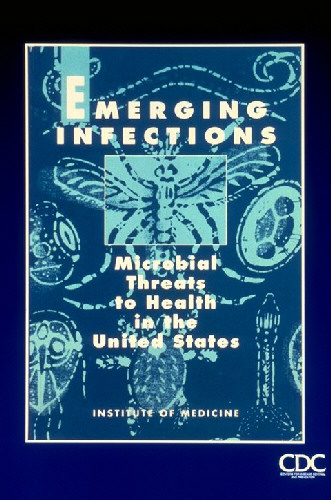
Cover of Institute of Medicine Report, Emerging Infections: Microbial Threats to Health in the United States